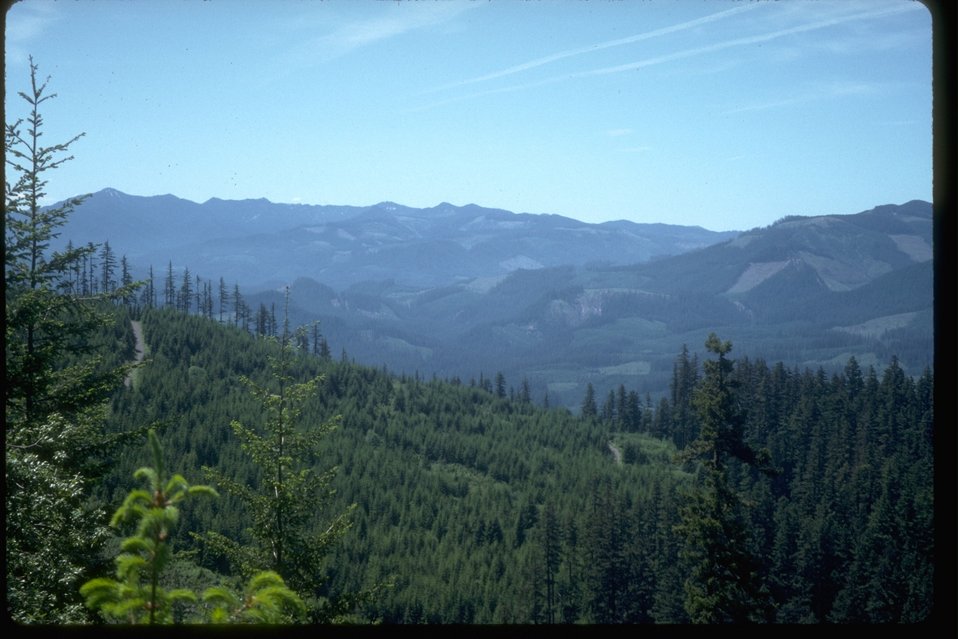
Watershed scene in Western Oregon.